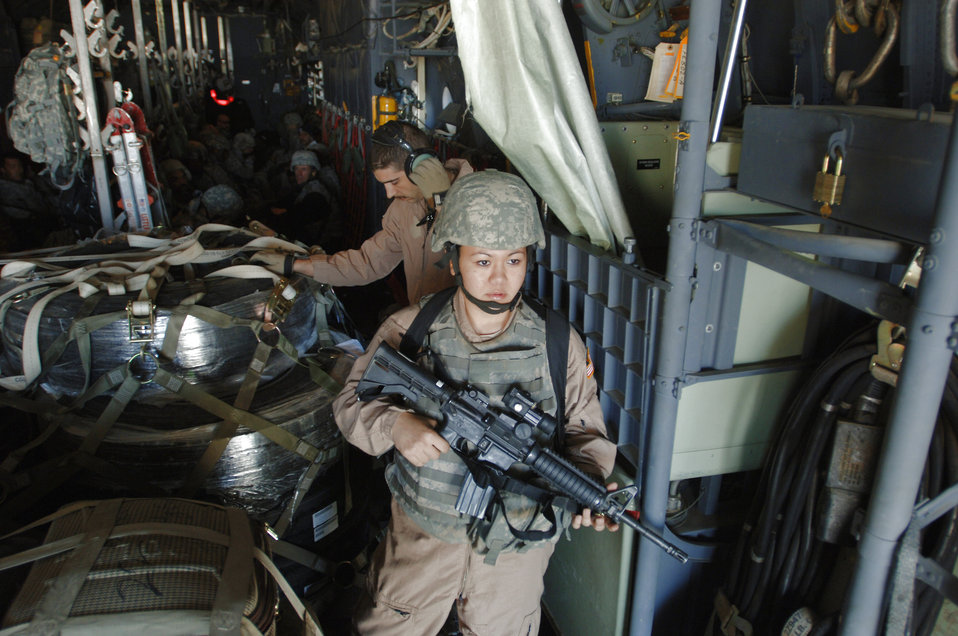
Airmen provide FAST coverage

Senior Airman Rosie Munoz, prepares to egress a 777th Expeditionary Airlift Squadron C-130 Hercules while Airman 1st Class Nicholas Camino prepares a pallet of gear for offloading Nov. 22 at a remote location in Iraq. Airman Munoz is a member of a 332nd Expeditionary Security Forces Squadron Fly Away Security Team. She is deployed from Andrews Air Force Base, Md., and calls El Paso, Texas, home. Airman Camino is a 777th EAS loadmaster.